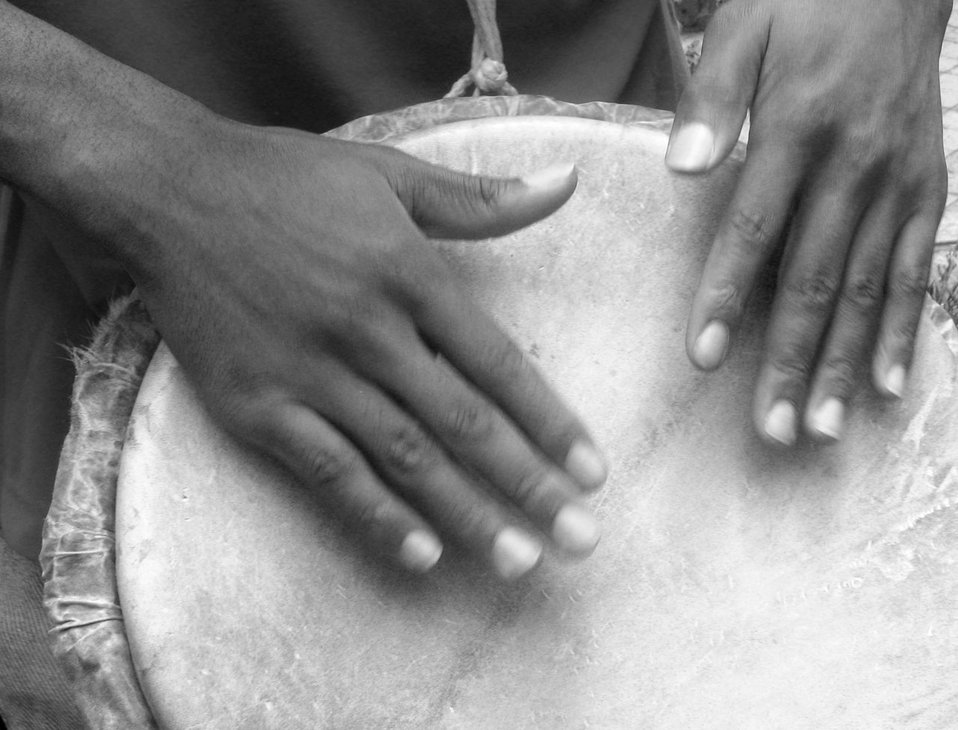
Drum & hand

Yemba drum played with hands.